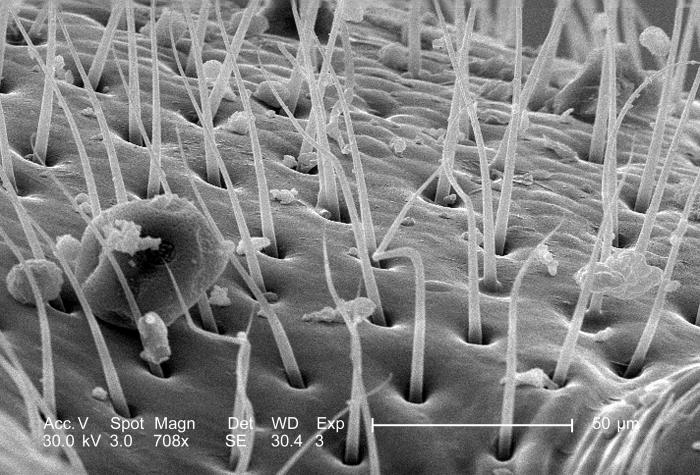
This scanning electron micrograph (SEM) depicted a magnified view of the chitinous exoskeleton of an unidentified green-colored insect found outside on the ground in the Decatur, Georgia suburbs; Magnified 708x.